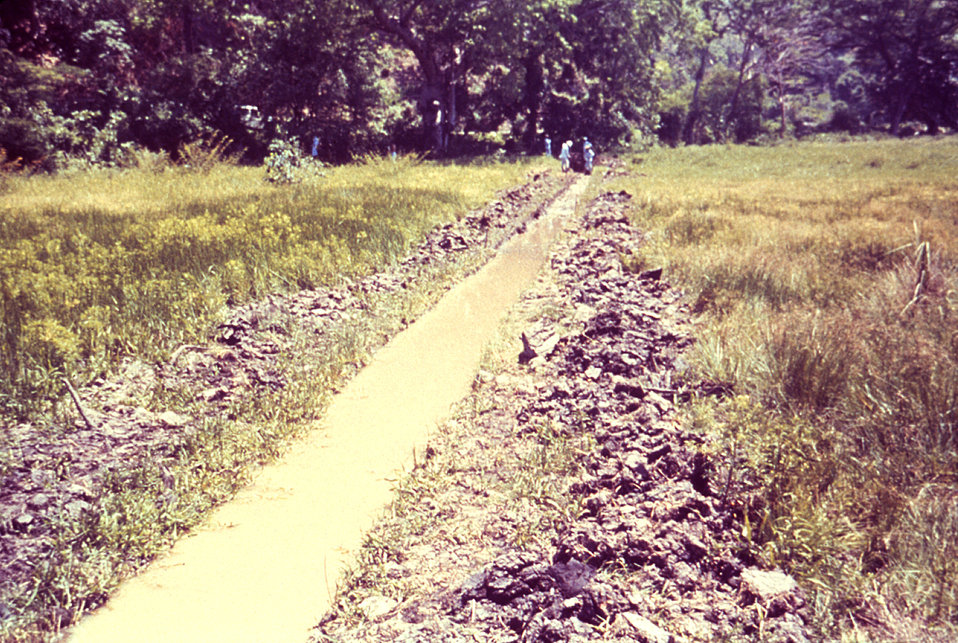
This drainage canal was manually constructed in order to provide a permanent waterway promoting the free-flow of water through a malaria-prone region.